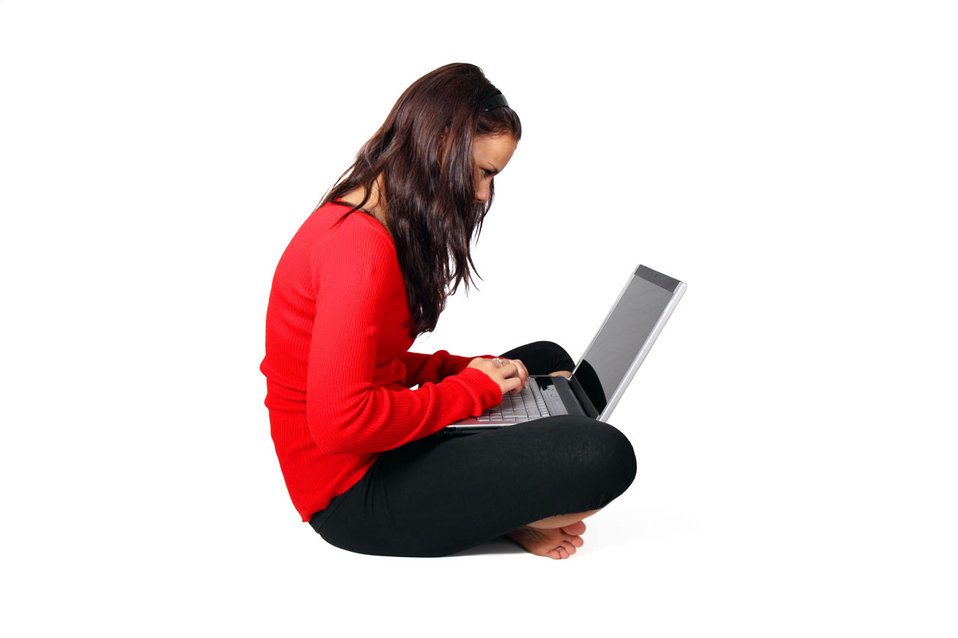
Young woman with laptop on her lap.